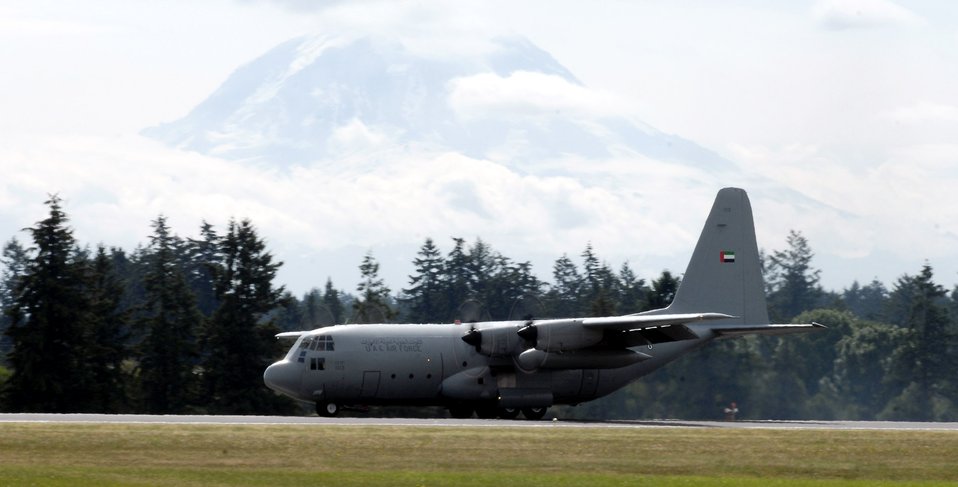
Rodeo 2007

A United Arab Emirates air force C-130 arrives at McChord Air Force Base, Wash., July 16 for Air Mobility Command's Rodeo 2007. The event is a readiness competition for U.S. and international mobility air forces. It focuses on improving warfighting capabilities and support of the war on terrorism.